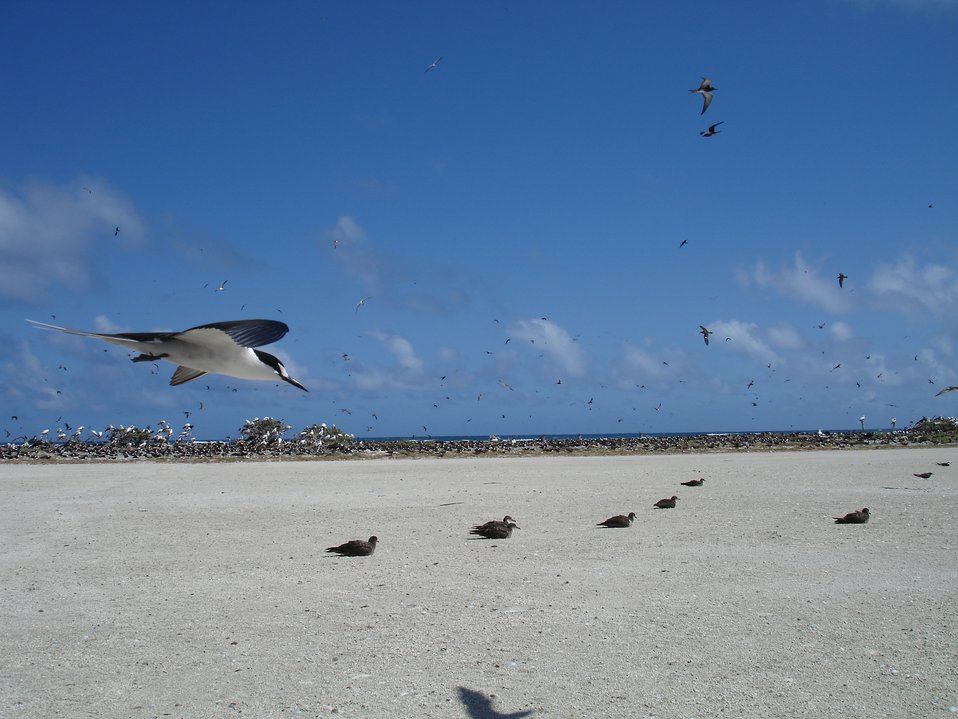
Sooty tern in flight